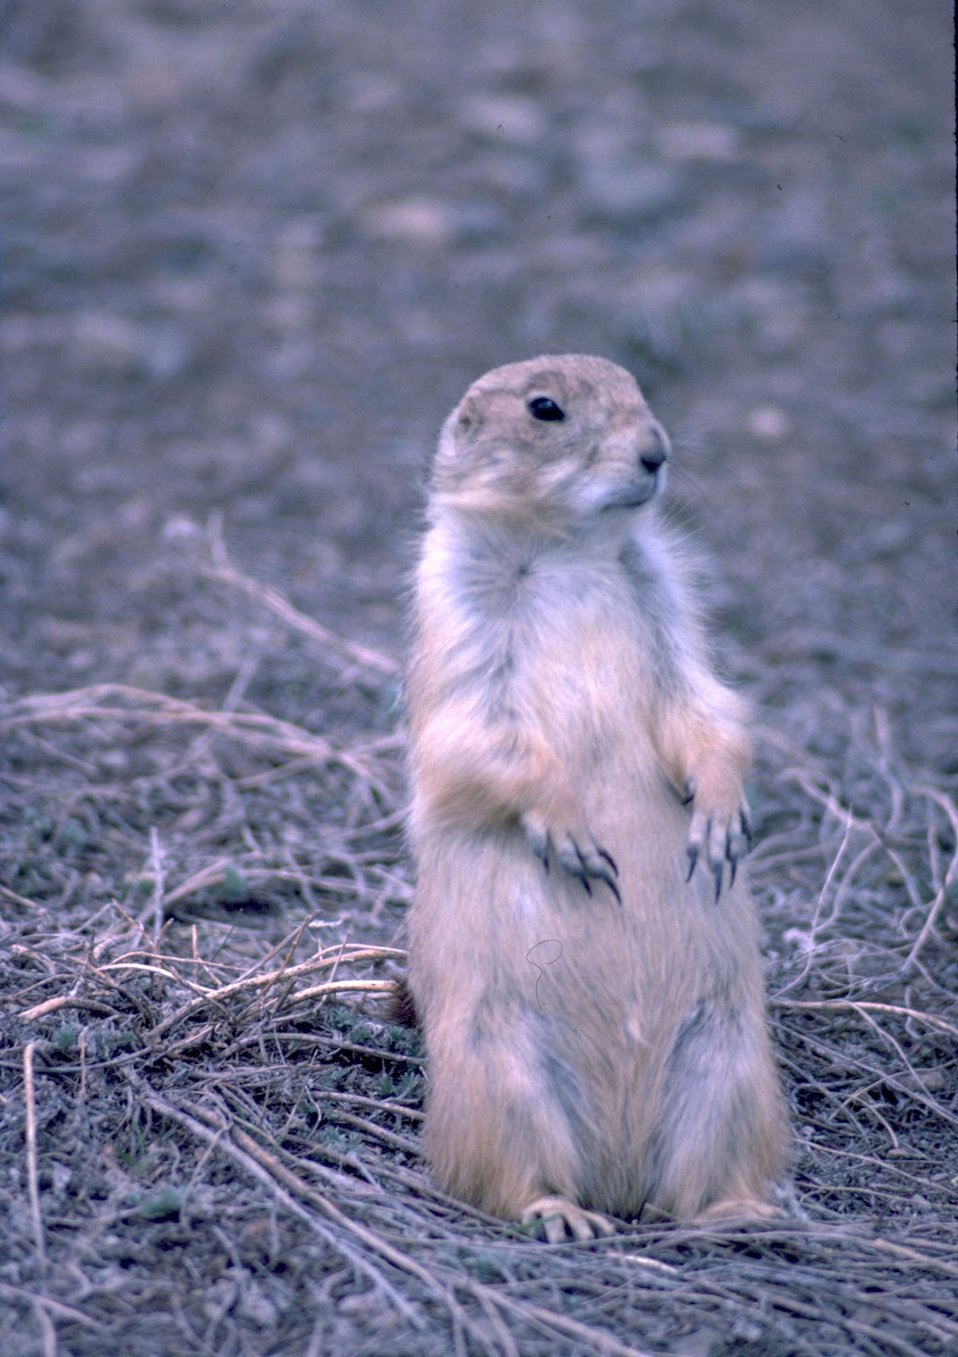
Black tailed prairie dog, standing